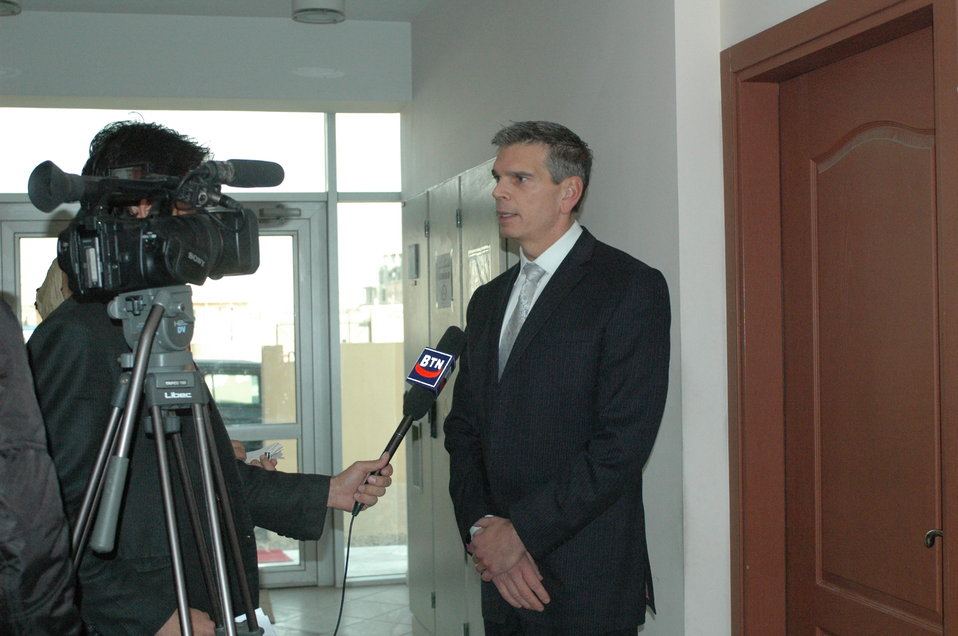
Community Based Stabilization Grants Ceremony, December 7, 2010